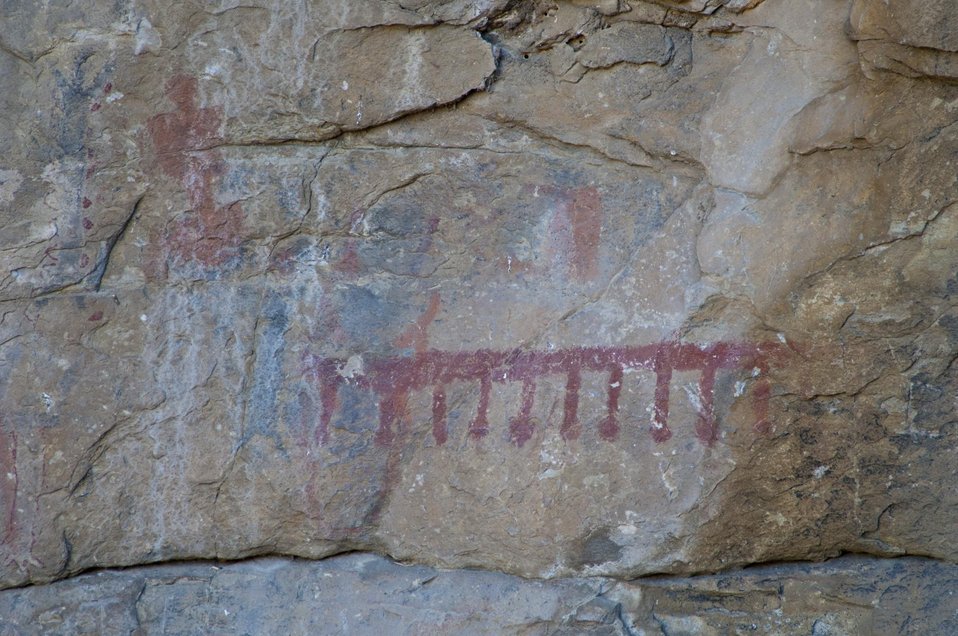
Pictograph at Painted Rock, Carrizo Plain 8